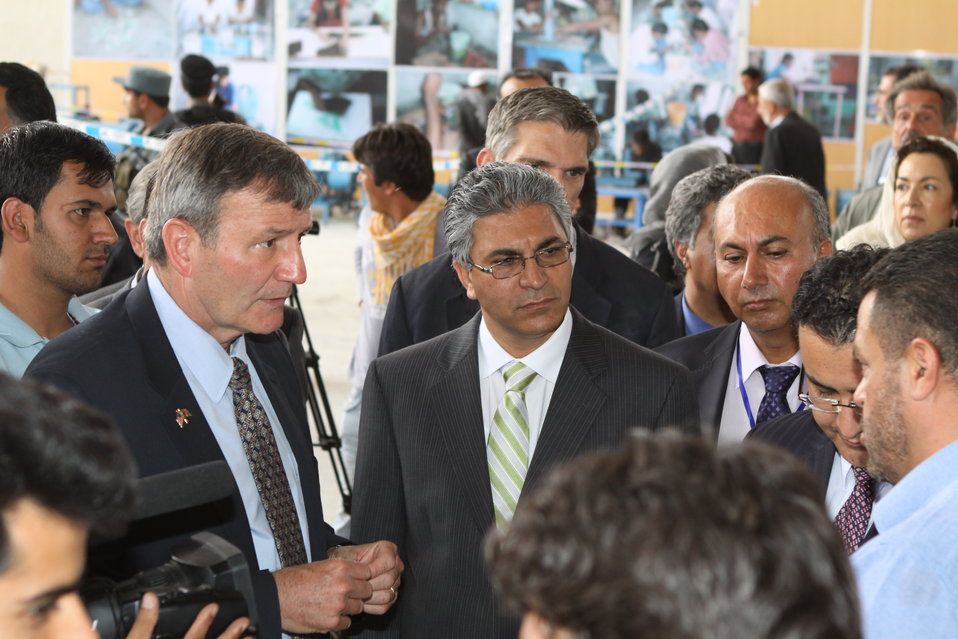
100525 Hirat Marble Conference 423